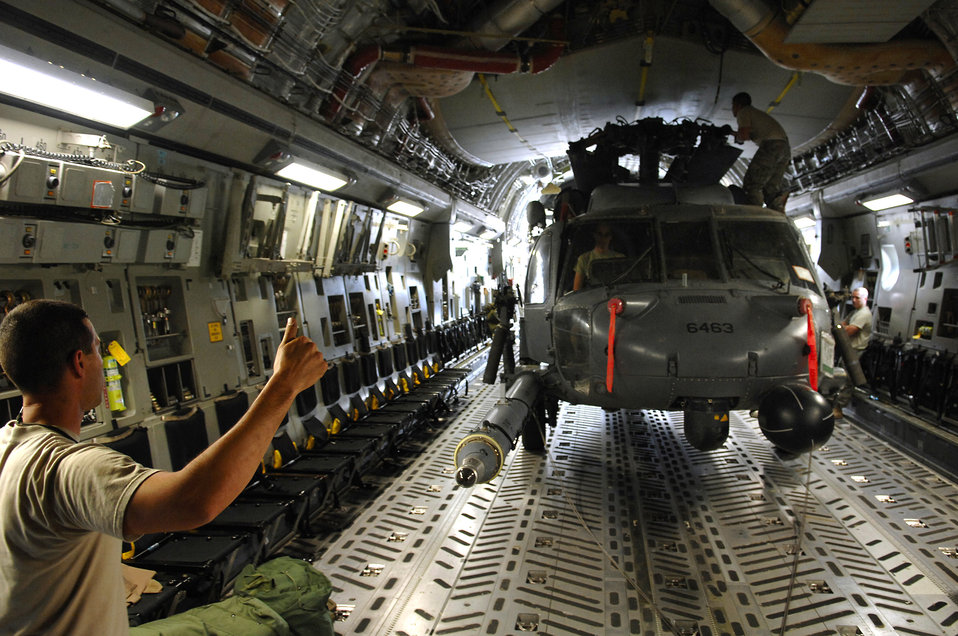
How to put a square peg in a round hole

Tech. Sgt. Joseph Herrera gives a thumbs up to loadmasters during an upload of an HH-60 Pave Hawk into a C-17 Globemaster III July 12 at Joint Base Balad, Iraq. The helicopter is configured in a folded position that allows it to be loaded with enough clearance all around. Sergeant Herrera is a 64th Expeditionary Helicopter Maintenance Unit crew chief deployed from Davis-Monthan Air Force Base, Ariz.